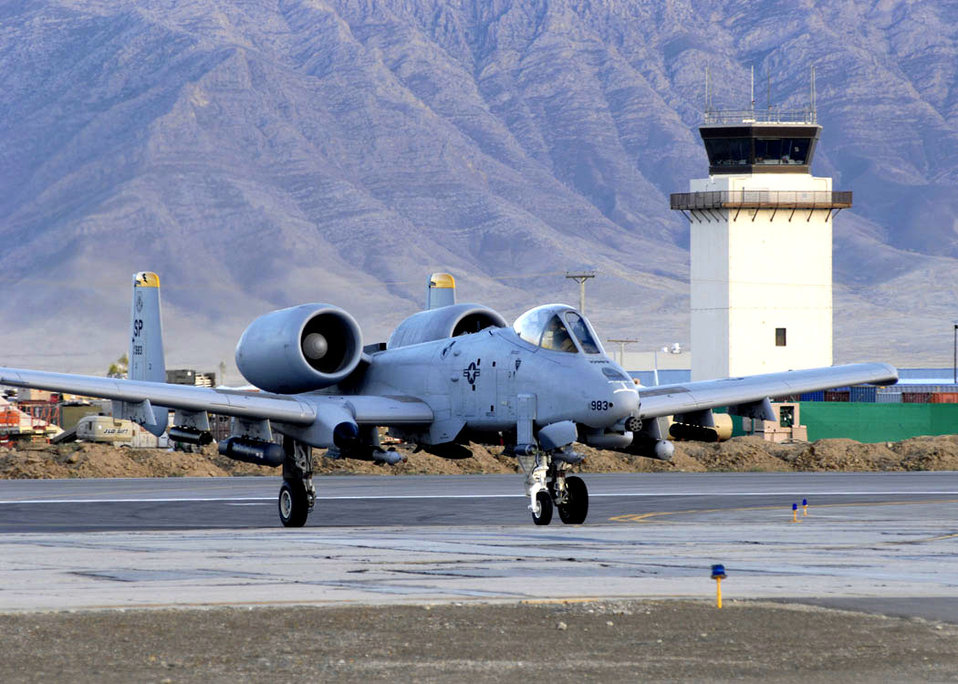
Nov. 13 airpower summary: A-10s protect ground forces

An A-10 Thunderbolt II taxis on the runway at Bagram Airfield, Afghanistan. A-10s provide close-air support and perform sorties providing top cover for ground forces in Southwest Asia.